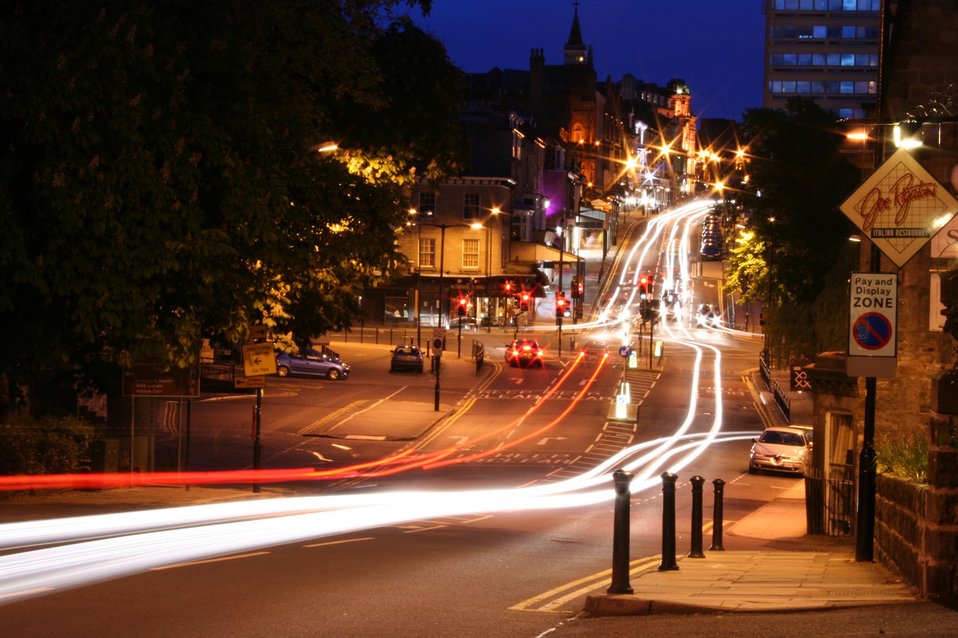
Traffic at night in harrogate town centre.